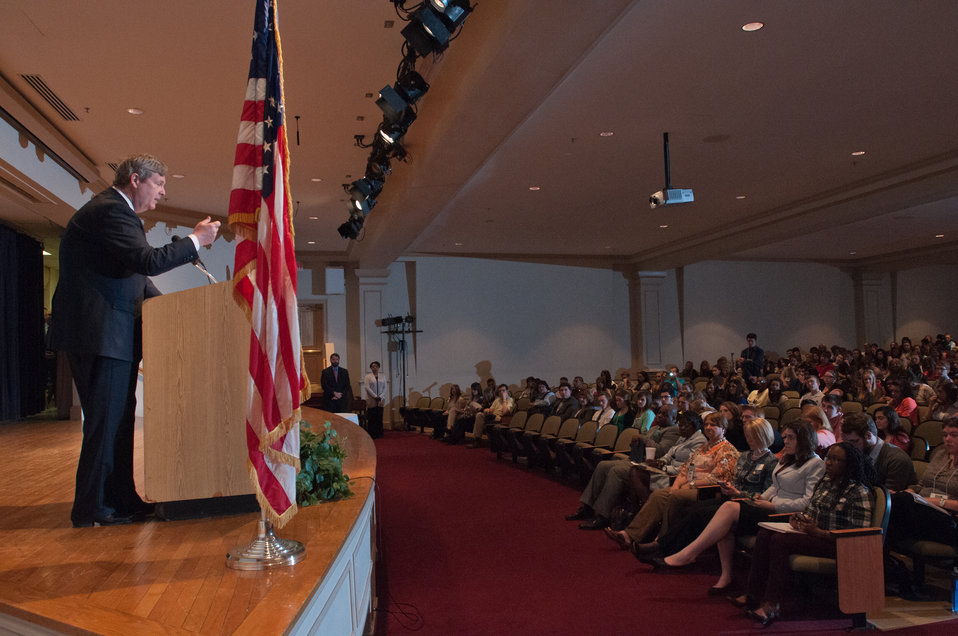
U.S. Department of Agriculture (USDA) Secretary Tom Vilsack delivers the keynote remarks to approximately 300 youth members, Extension Educators and 4-H Adult Volunteers from across the nation, as well as U.S. Territories at the 2013 National 4-H Conference, on Monday, April 8, 2013 in Chevy Chase, MD. Also speaking at the event is Agriculture Departmental Management Office of Advocacy and Outreach Director Carolyn Parker and National Institute of Food and Agriculture Director Dr. Sonny Ramaswamy. The youth delegates are in grades 10-12 (15-19 years old). The purpose of the conference is to 1) engage 4-H youth in personal development experiences that will increase knowledge, resources, and skills; 2) discuss topics affecting youth and 4-H programming nationwide; and 3) empower and mobilize 4-H youth to create positive social change in their communities in a meaningful and genuine way. The conference also reinforces the rich history of 4-H and its valuable tie to USDA, Cooperative Extension and the Land-grant University system.USDA Photo by Lance Cheung.